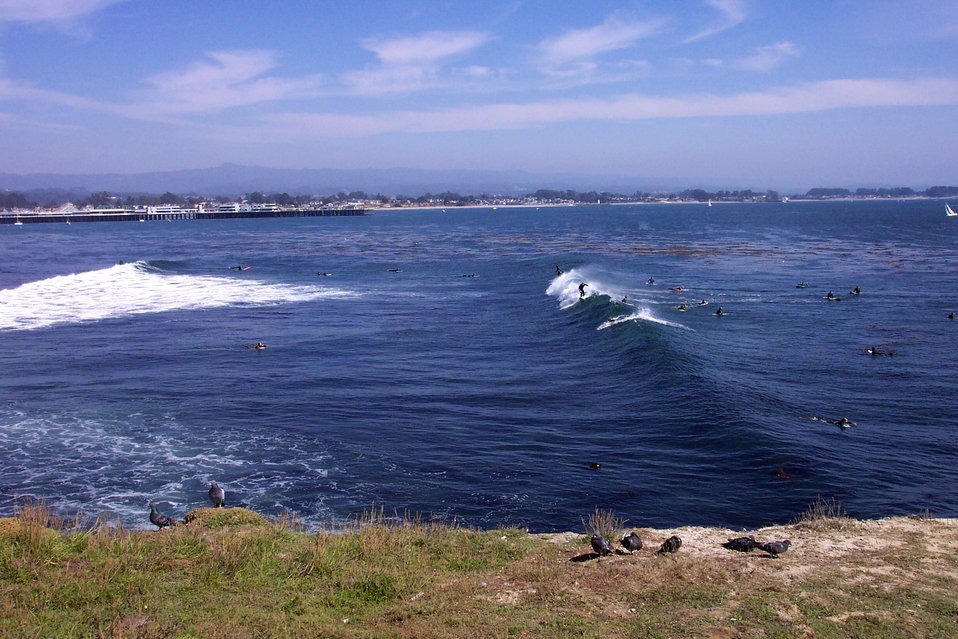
Surfing at Steamers Lane.